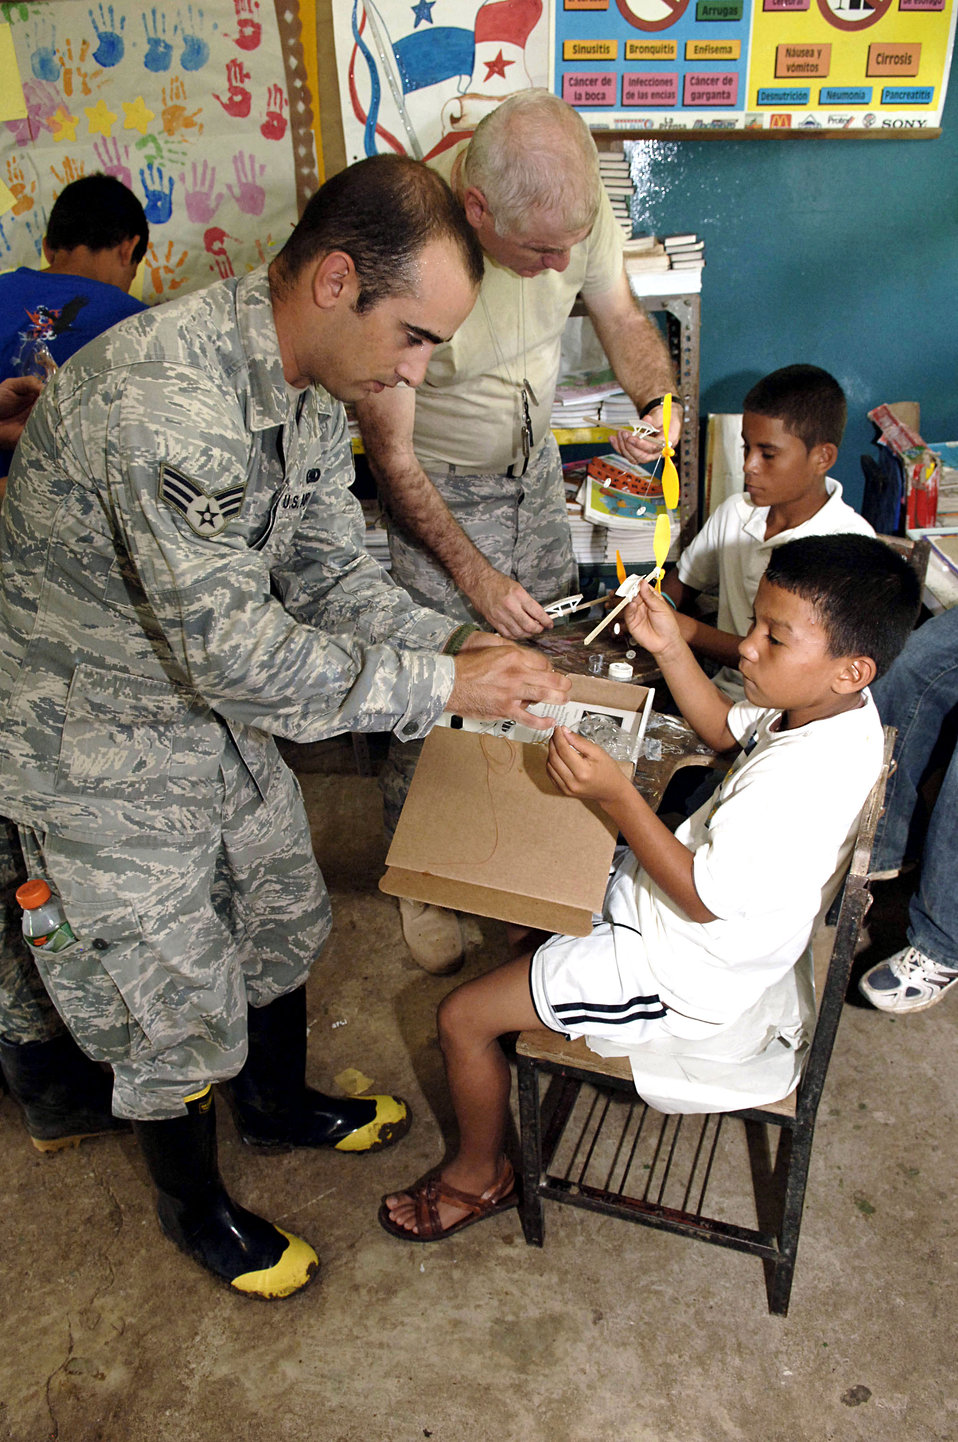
New Horizons Airmen spend day at Panamanian school

Senior Airman Alex James (left) and Chaplain (Maj.) Norris Burkes help children assemble rubber-band airplanes July 12, 2010, at the Sansonsito School in Panama. Chaplain Burkes and Airman James are assigned to the 820th Expeditionary RED HORSE Squadron.